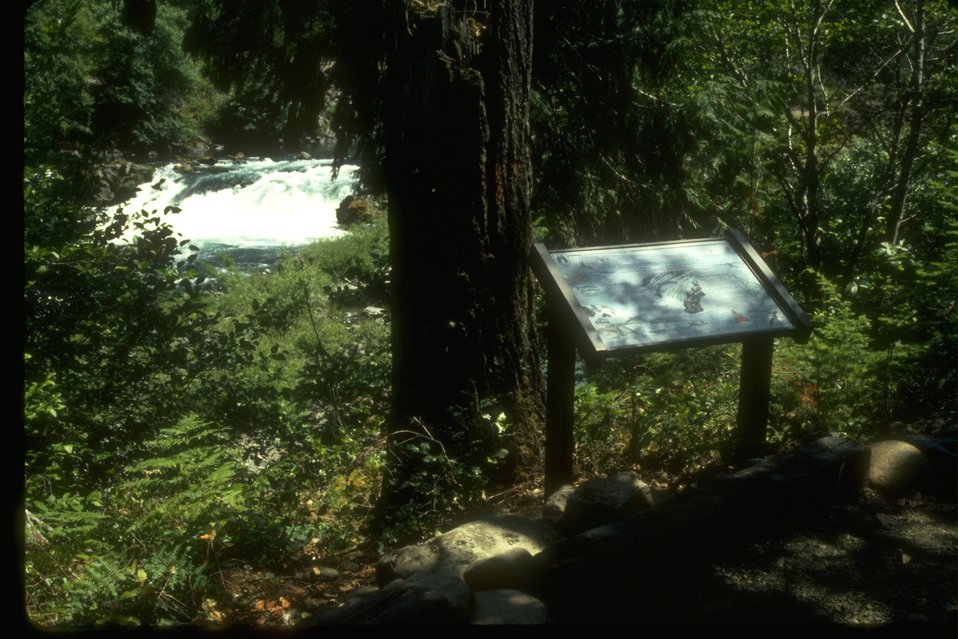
Deadline Falls (North Umpqua River) interpretive panel.